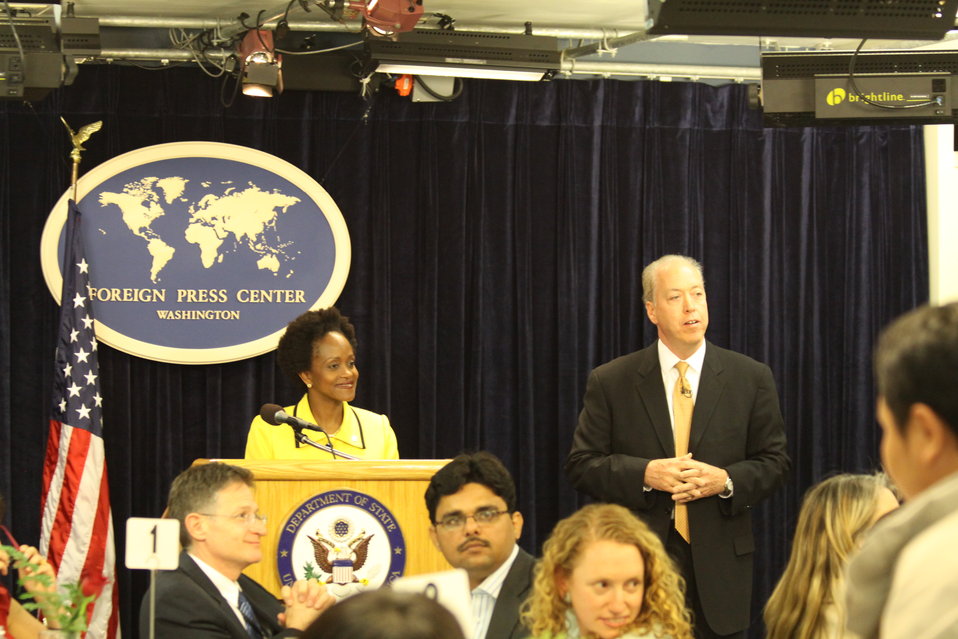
Assistant Secretary Brimmer Speaks to a Group of Foreign Journalists

Assistant Secretary of State for International Organization Affairs Esther Brimmer speaks to a group of foreign journalists at the Foreign Press Center in Washington, D.C., during a luncheon at the 2011 World Press Freedom Day Global Conference, on May 3, 2011.